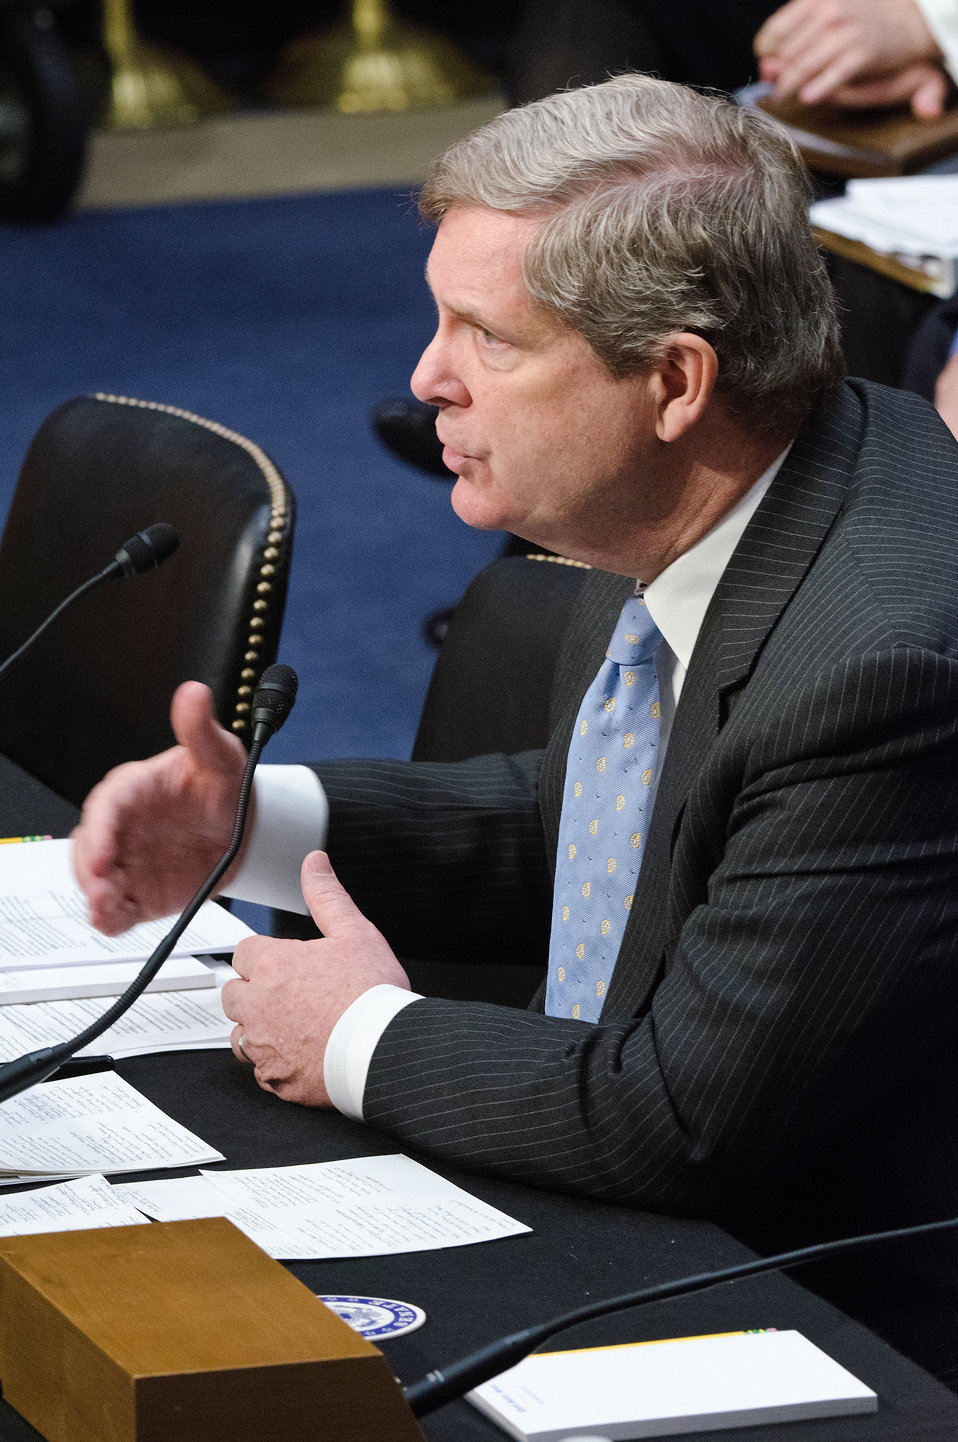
Agriculture Secretary Tom Vilsack responds to questions from Senators on the Senate Agriculture Committee during testimony on “Healthy Food Initiatives, Local Production and Nutrition,” on Wednesday, March 7, 2012 in Washington, D.C.